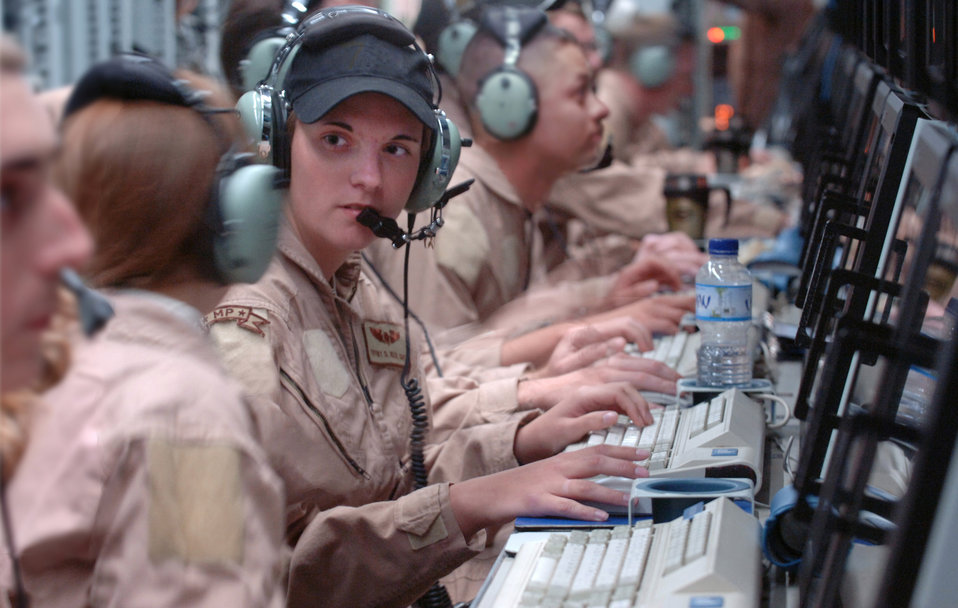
Scanning the globe

Staff Sgt. Tiffiny Reed (right) and Senior Airman Vanessa Lobdell monitor equipment Jan. 4 on board an RC-135 Rivet Joint aircraft. They are cryptologic operators deployed from Offutt Air Force Base, Neb.